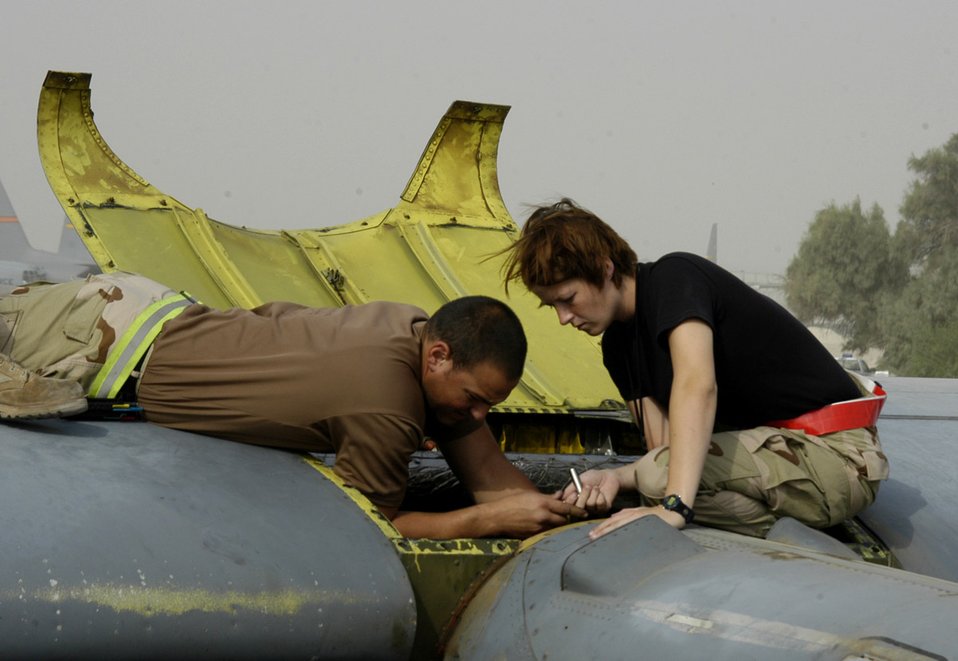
'Herc' maintenance

SOUTHWEST ASIA -- Senior Airman Dominick Rodriguez (left) and Staff Sgt. Brooke Skalany replace clamps on a C-130 Hercules engine's air bleed-down system. The system helps the engines start through air compression. The maintainers are deployed to the 386th Expeditionary Aircraft Maintenance Squadron here from the 463rd AMS at Little Rock Air Force Base, Ark.Their unit maintains aircraft that conduct operations in Iraq, Afghanistan and the Horn of Africa.